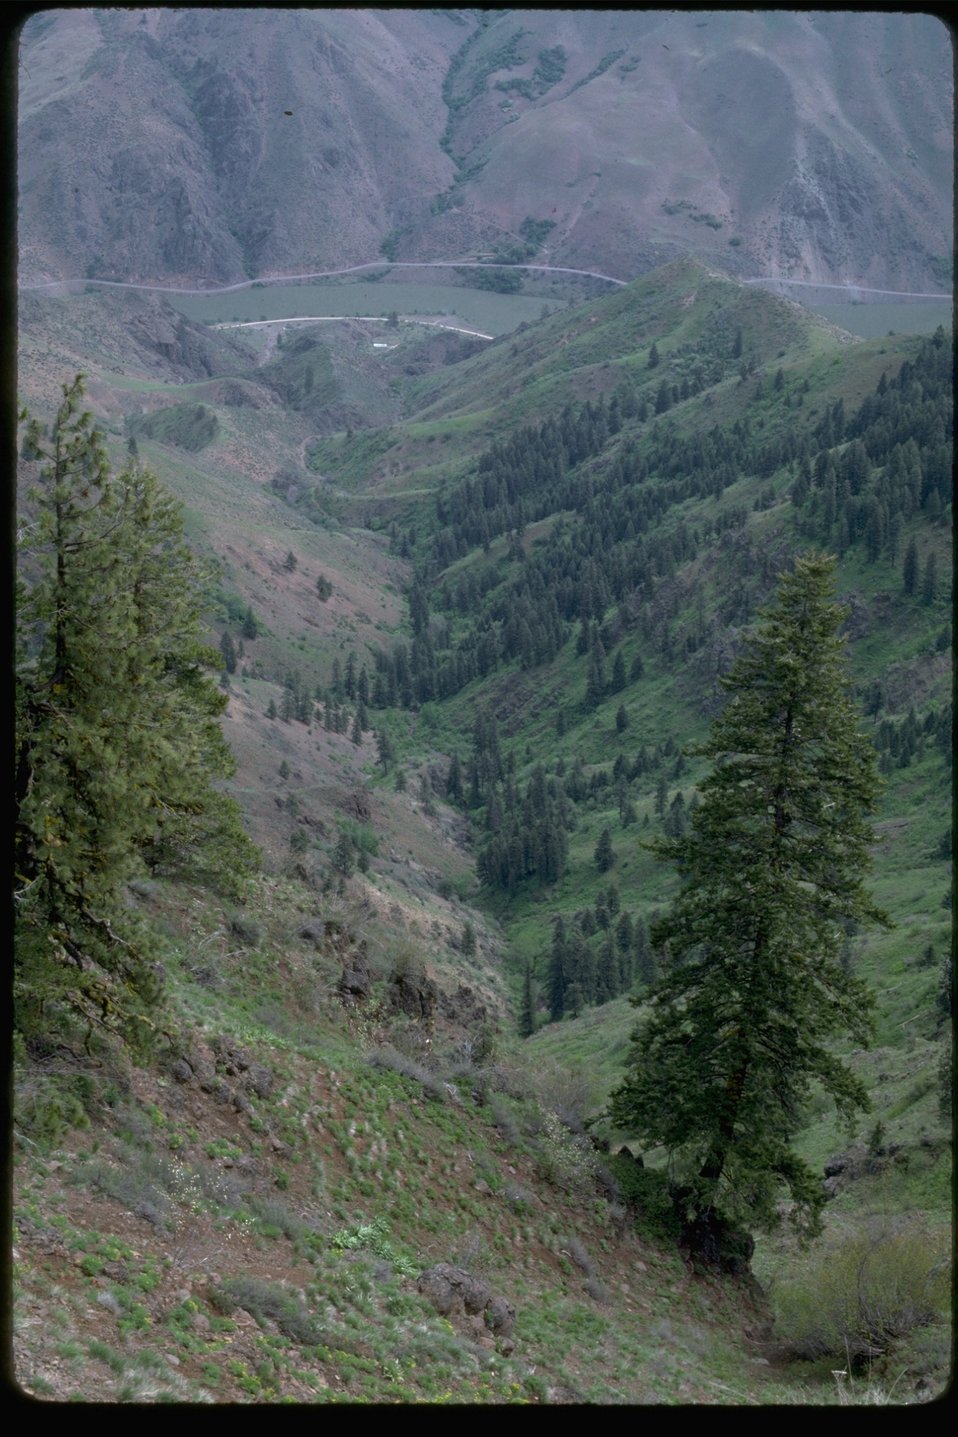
Canyon in the Homestead Wilderness Study Area. WSA OR 6-2.